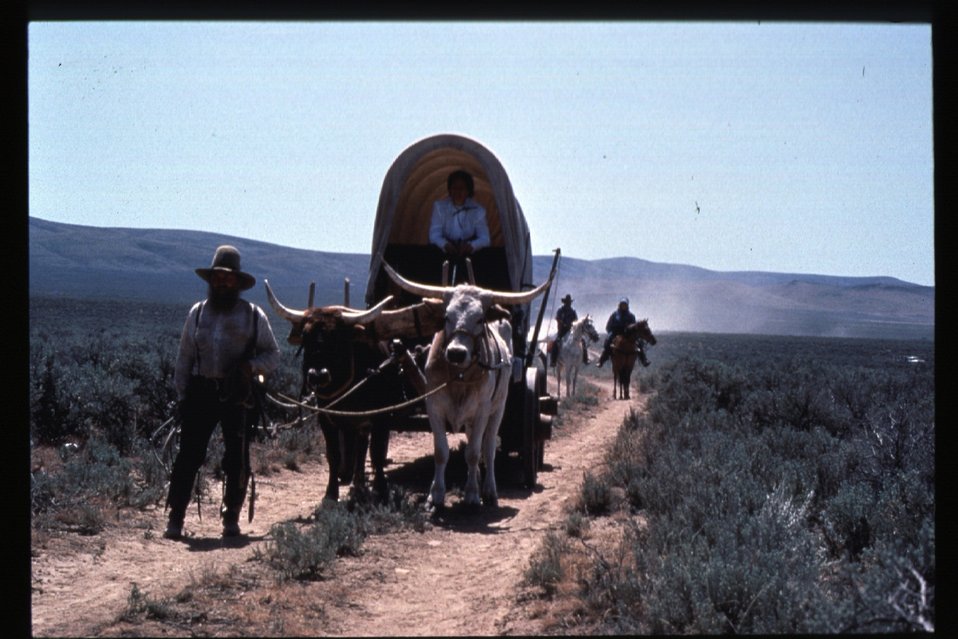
Ox Wagon Oregon Trail Reenactment USRD Upper Snake River District